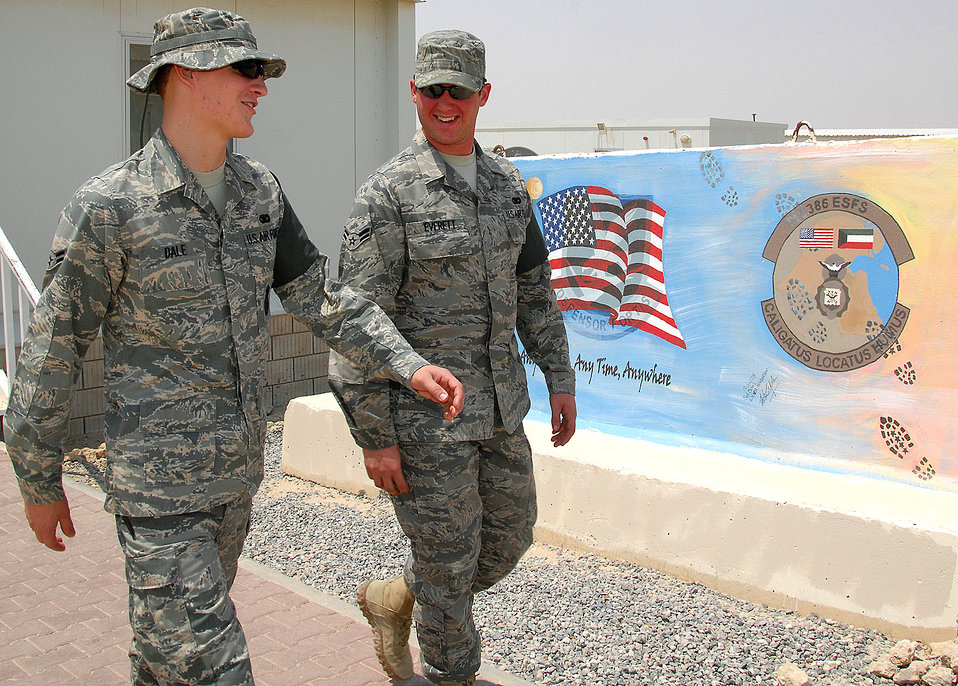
Airman exemplifies Wingman concept, saves life during mission

Airmen 1st Class William Dale, left, and Thomas Everett talk about how quick thinking avoided a tragic incident Aug. 26 at an air base in Southwest Asia. During a cargo mission in early August, Airman Everett saved Airman Dale from hypoxia and possible brain damage from oxygen deprivation. Airman Everett has been nominated for the Airman's Medal for his efforts. Both Airmen are deployed from Nellis Air Force Base, Nev., and are assigned to the 386th Expeditionary Security Forces Squadron.